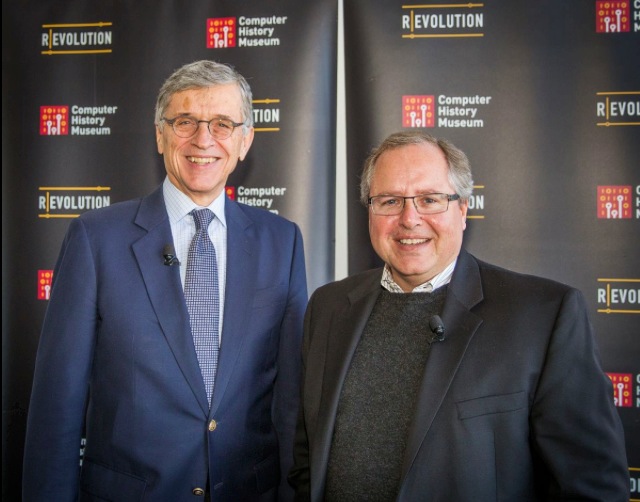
1.10.14 Computer History Museum

1.10.14 Chairman Wheeler giving remarks at the Computer History Museum in Oakland, California. He discussed networks, innovation & economic growth.